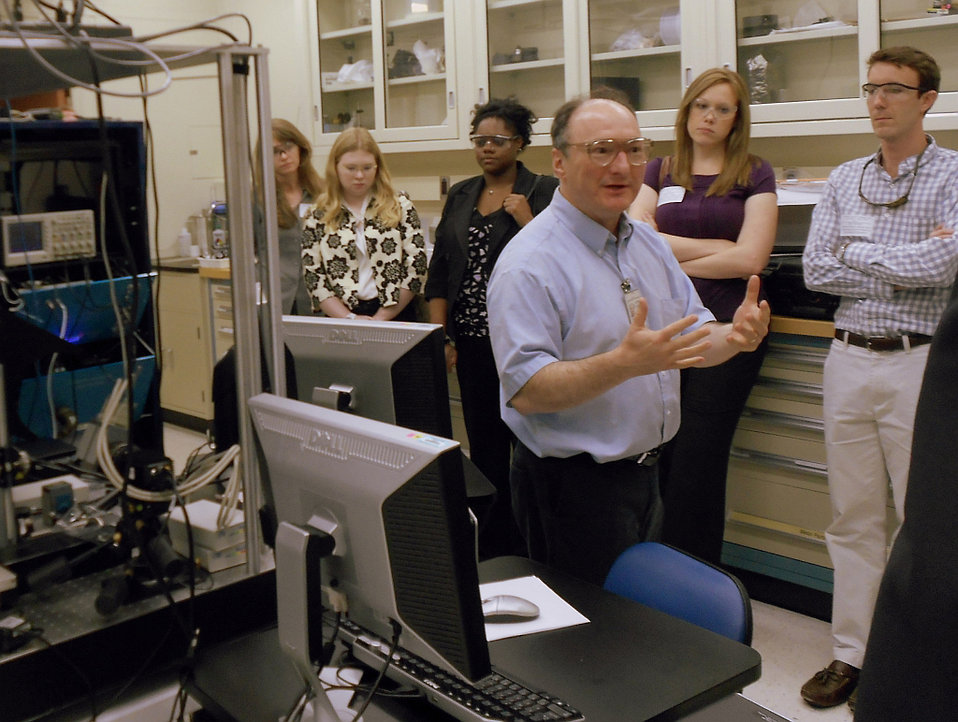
Congressional Staff Tour

Joe Rice (center) of the Sensor Science Division in NIST’s Physical Measurement Laboratory describes NIST’s Hyperspectral Image Projector and its use in homeland security applications to a tour of congressional staff members of the Homeland Security Dialogue Forum.